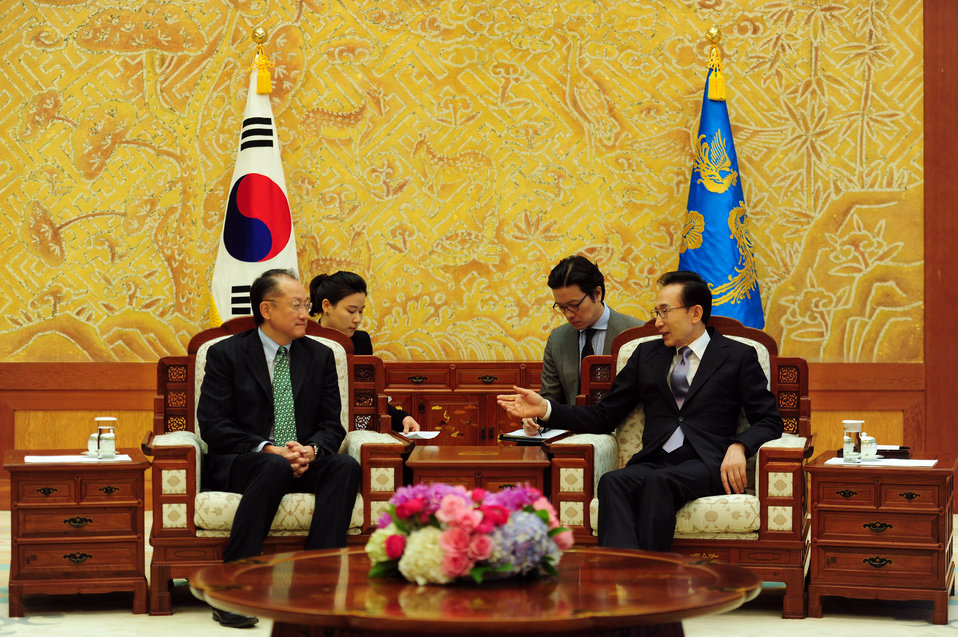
Dr. Jim Yong Kim meeting with South Korean President Lee Myung-Bak

Dr. Jim Yong Kim, U.S. Nominee for the World Bank Presidency, met yesterday with South Korean President Lee Myung-Bak in Seoul, South Korea. To read more about the visit and President Lee’s endorsement of Dr. Kim’s candidacy, click here: english.yonhapnews.co.kr/national/2012/04/02/60/030100000...